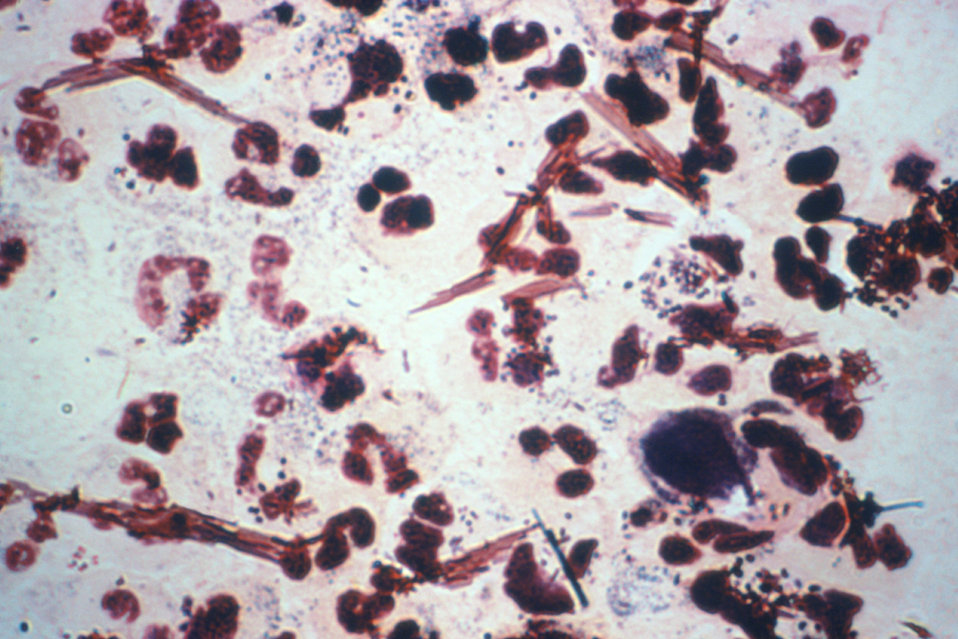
This poorly colorized Gram-stain image of a urethral discharge specimen reveals the presence of N. gonorrhoeae bacteria.